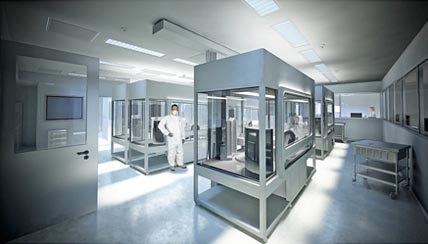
This artist's conception shows what the High-Throughput Laboratory Network (HTLN) could look like when fully implemented at a site.

The first node of that network will be UCLA's Global Bio Laboratory. The lab will consist of several automated or semi automated stations for inventorying samples gathered from influenza hot spots. preparing the samples for analysis, and screening them to make sure they contain influenza A. Built to Los Alamos specifications by Agilent Technologies about the size of a compact car, each automated genotyping station will perform the functions needed to first amplify then sequence viral gene segments.